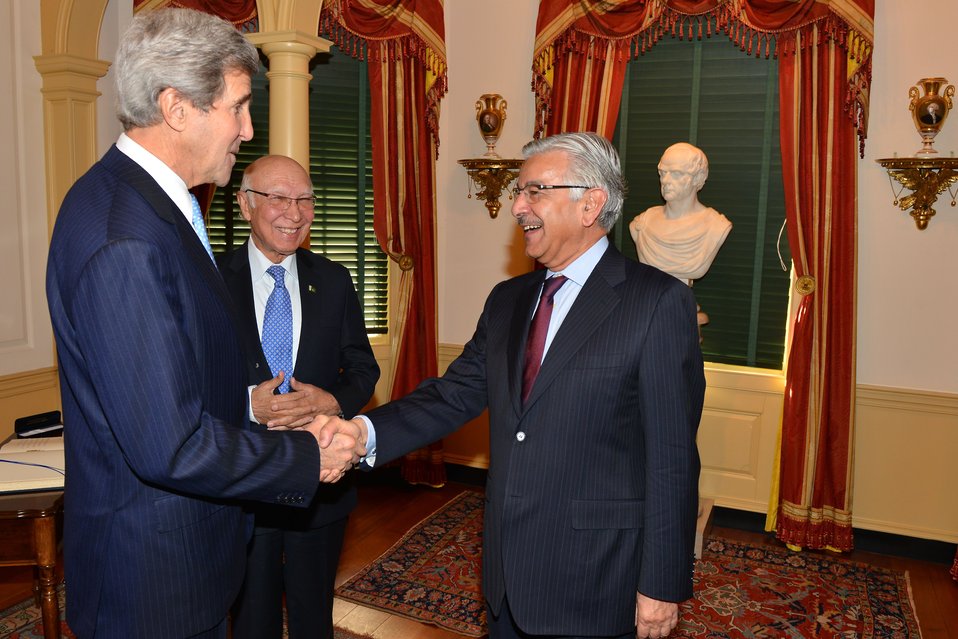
Secretary Kerry Greets Pakistani Minister Khawaja Muhammad Asif

With Pakistani National Security and Foreign Affairs Advisor Sartaj Aziz looking on, U.S. Secretary of State John Kerry welcomes Khawaja Muhammad Asif, Pakistani Minister of Water and Power and Minister of Defence, to the U.S. Department of State for the U.S.-Pakistan Strategic Dialogue Plenary Session in Washington, D.C., on January 27, 2014.